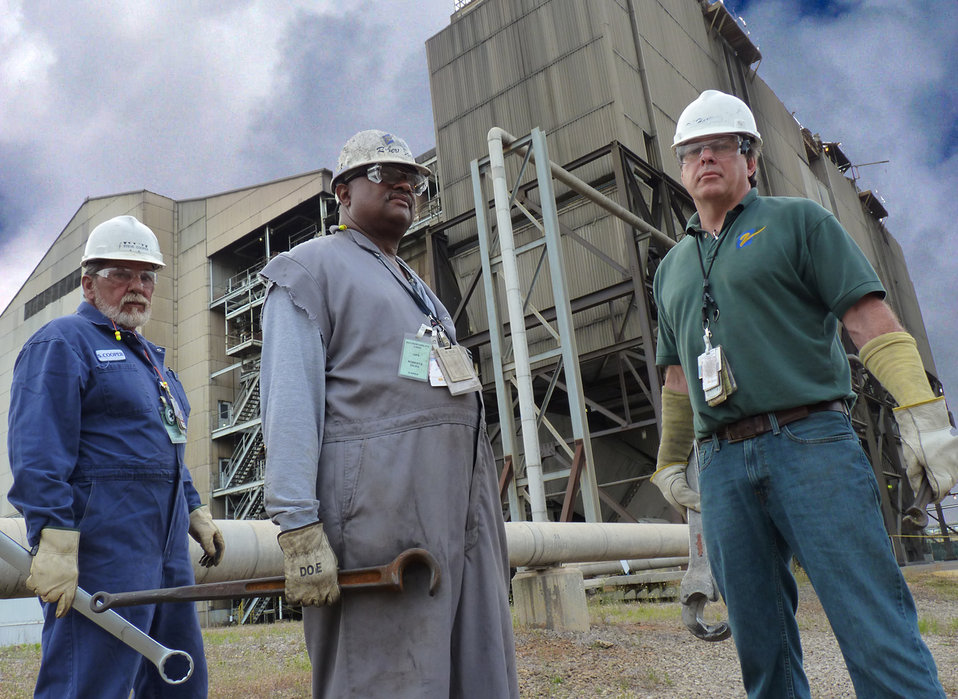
Savannah River Site Retires D-Area Powerhouse after Nearly 60 Years of Service

The Savannah River Site (SRS) has shut down the massive, coal-powered D-Area powerhouse as the site turns to new, clean and highly efficient power generation technology.

“The recent startup of three new wood-chip burning (biomass) steam plants at SRS means we no longer need this facility. But I humbly thank the mechanics and operators whose skill, dedication, and creativity kept this facility operating for nearly 60 years,” DOE-Savannah River Assistant Manager for Infrastructure and Environmental Stewardship Karen Guevara said.

Photo:

SRNS Maintenance Supervisor Steve Cooper, left to right, Control Room Operator Robert Dicks, and Deputy Operations Manager Ren Hatfield stand near a boiler unit of the D-Area powerhouse. The three workers have a combined experience of 83 years at the facility.